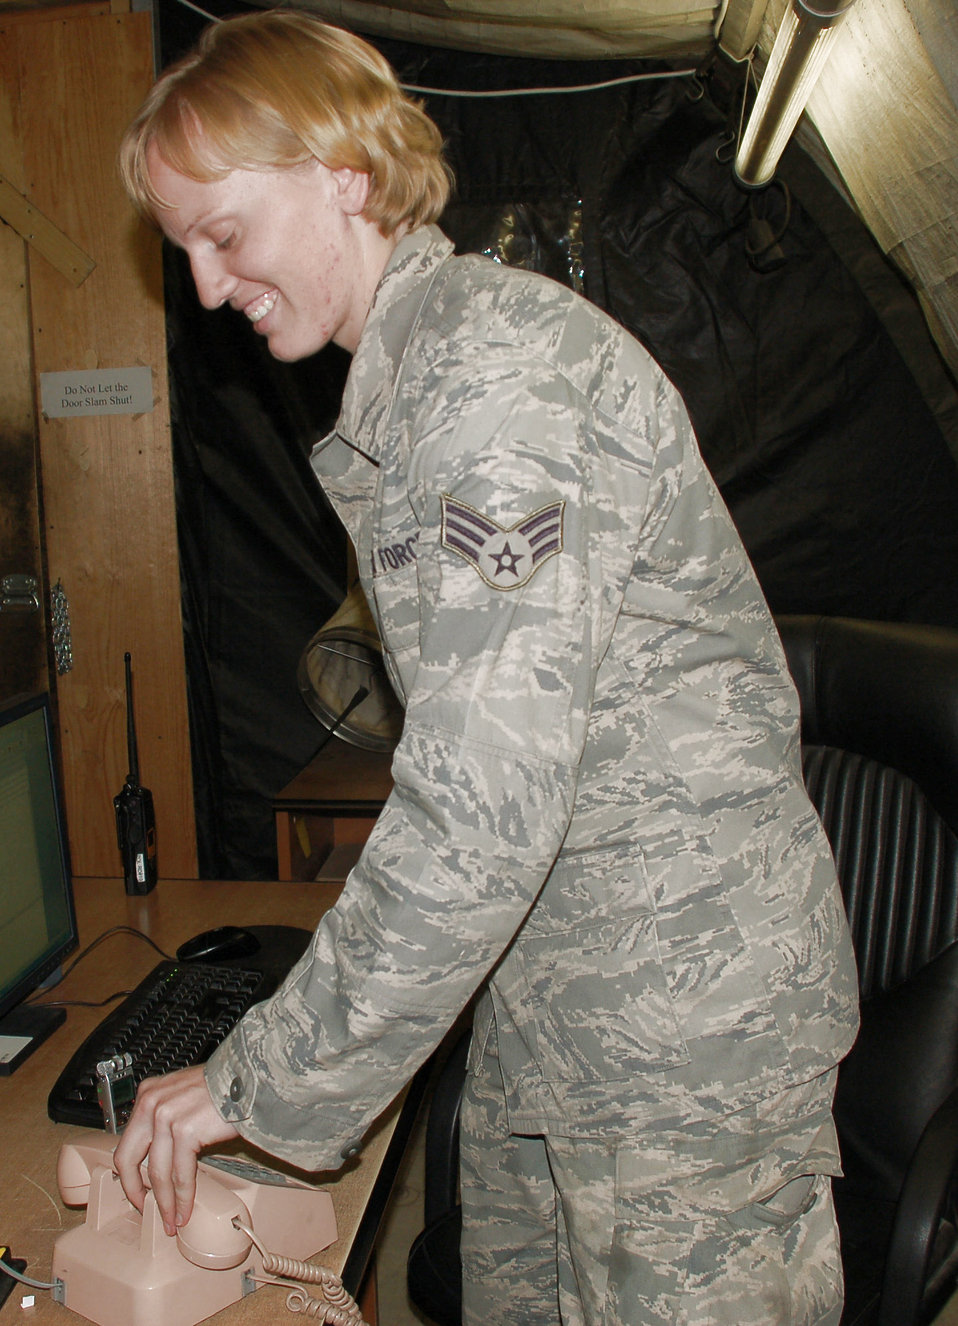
Manas Airman receives surprise call from president

Senior Airman Victoria Drefs grins as she prepares to answer a call from President George W. Bush Nov. 27 at Manas Air Base, Kyrgyzstan. The president called the native of Armour, S.D., to wish her a happy Thanksgiving. Airman Drefs is a fuels specialist with the 376th Air Expeditionary Wing.